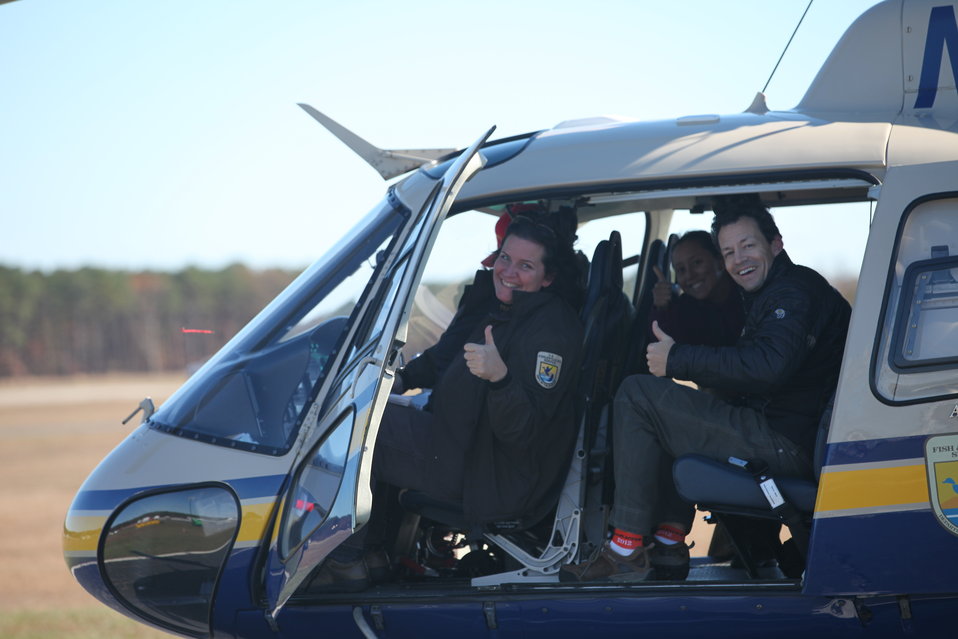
Off to survey damage from the storm (NY)

Long Island National Wildlife Refuge staff and Evan Hirsche give a thumbs up after a safety check as they are about to depart for an aerial survey of the damage caused by storm Sandy at the National Wildlife Refuges on Long Island, NY.